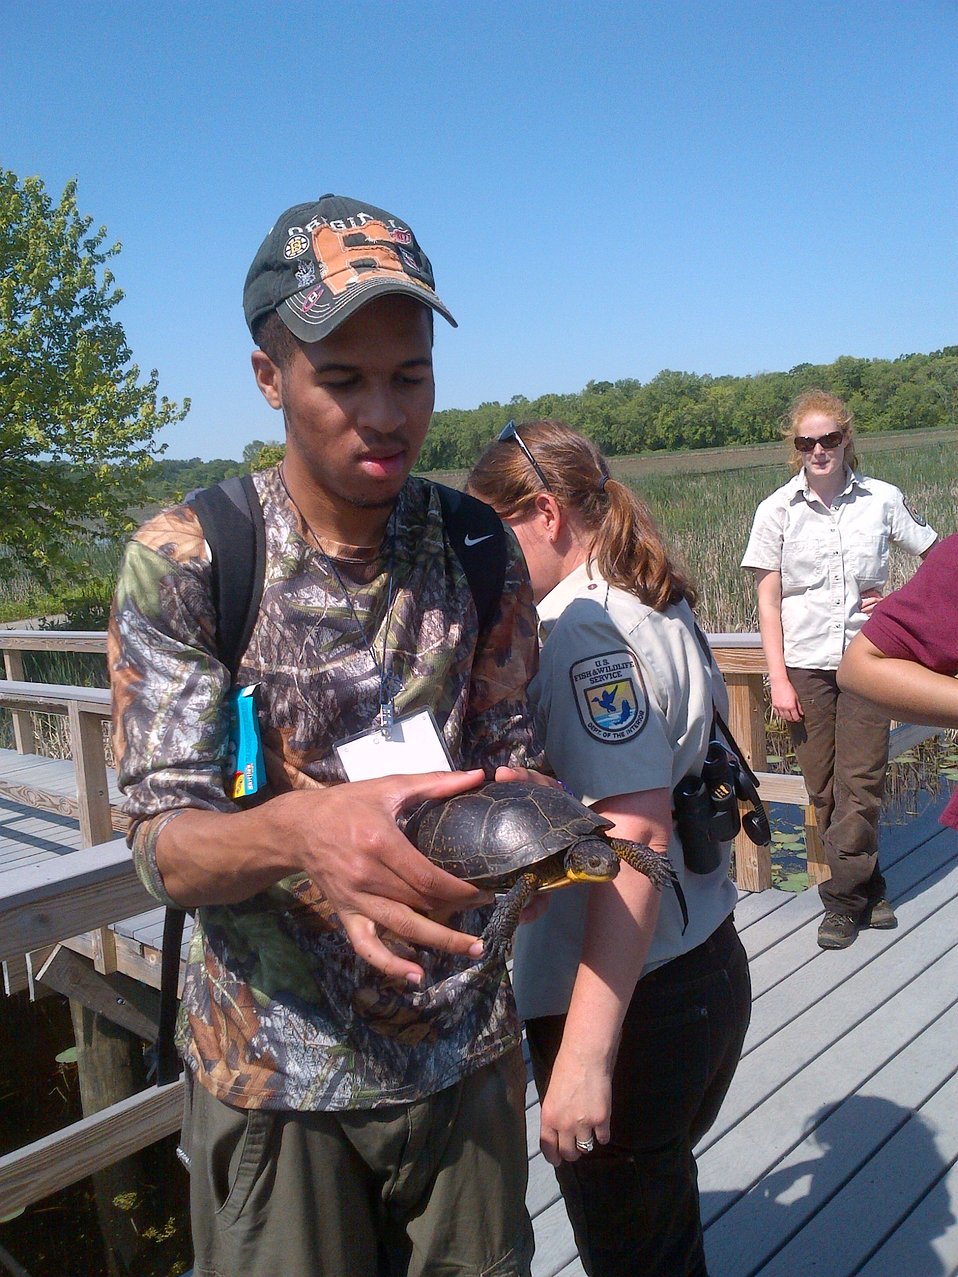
Blanding's Turtles at Great Meadows NWR

Ryan holding the Blanding's Turtle.